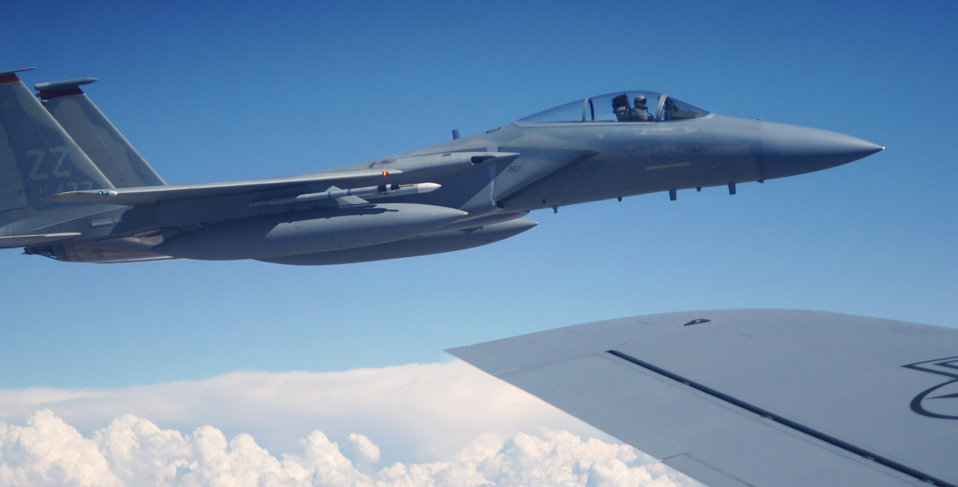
Refuelin' at the flag

An F-15 Eagle from Kadena Air Base, Japan, pulls away from a KC-135 Stratotanker after refueling during Red Flag, a two-week exercise that tests and trains servicemembers in real-time combat situations at Nellis Air Force Base, Nev. Red Flag is conducted over the Nevada Test and Training Range, which has more than 2.9 million acres of airspace. The KC-135 is based at MacDill AFB, Fla.